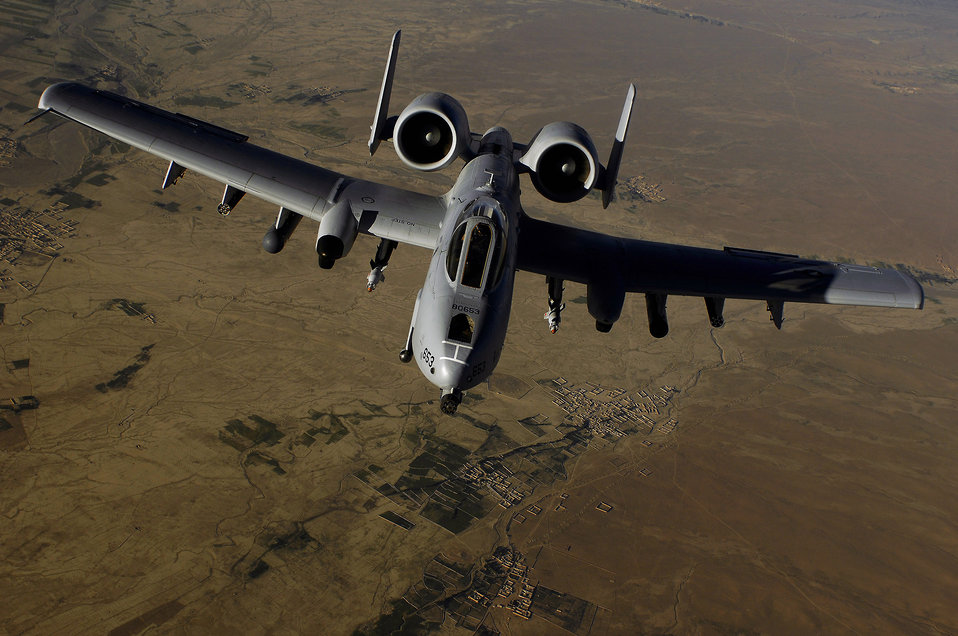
July 17 airpower summary: A-10s fire multiple weapons

An A-10 Thunderbolt II aircraft moves into position to receive fuel from a KC-135 Stratotanker during a mission over Afghanistan. A-10s are highly accurate weapons-delivery plateforms.